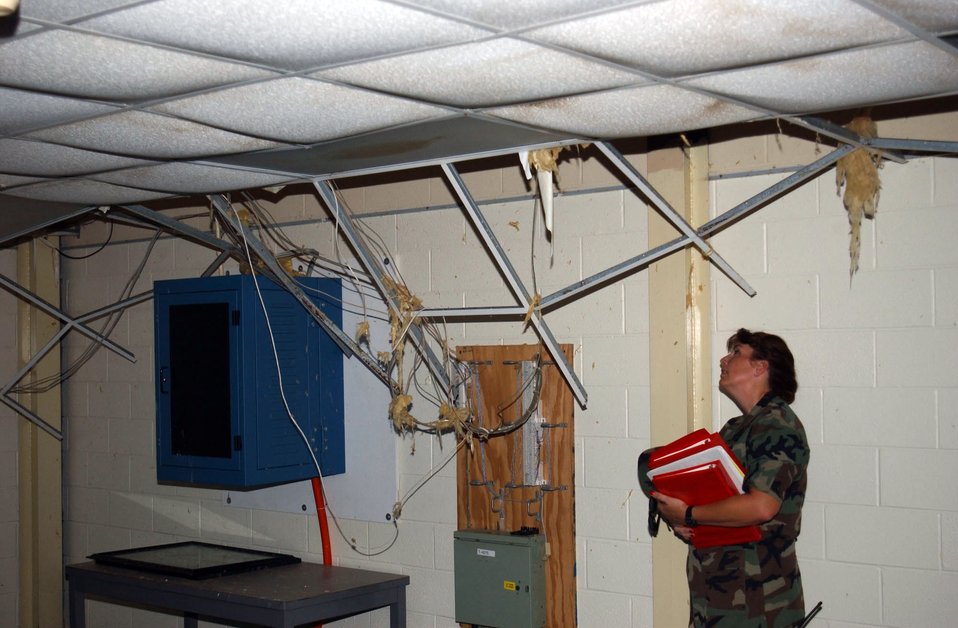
Rebuilding of Hurricane Hunters' home begins

KEESLER AIR FORCE BASE, Miss. -- First Lt. Wendy Hendley, 403rd Wing facility manager, inspects damage for Air Force Reserve Command civil engineers during AFRC's assessment team visit here Sept. 20. An early estimate sets the damage at more than $300 million. Many of the command's office buildings, maintenance shops and hangars were severely damaged by Hurricane Katrina on Aug. 30.